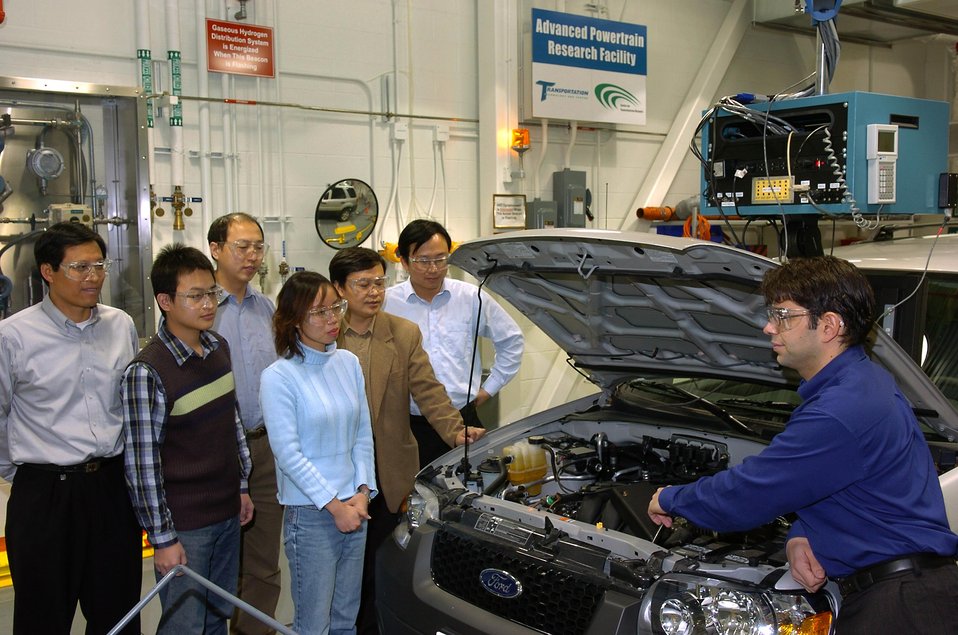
ARGONNE NATIONAL LABORATORY AND CHINESE RESEARCHERS DISCUSS FUEL ECONOMY AND PERFORMANCE ON A VEHICLE TO BE TESTED IN ARGONNE'S ADVANCED POWERTRAIN RESEARCH FACILITY.

DOE'S ARGONNE NATIONAL LABORATORY'S CENTER FOR TRANSPORTATION RESEARCH HAS DEVELOPED THE GREET (GREENHOUSES GASES, REGULATED EMISSIONS AND ENERGY USE IN TRANSPORTATION) SOFTWARE. GREET IS THE GOVERNMENT AND INDUSTRY STANDARD FOR ANALYZING VEHICLE AND FUEL COMBINATIONS. THE SOFTWARE CAN MEASURE THE USE OF TOTAL ENERGY IN BOTH RENEWABLE AND NON-RENEWABLE, THE EMISSIONS OF CARBON DIOXIDE AND OTHER POLLUTANTS. THE SOFTWARE HAS MORE THAN 2,000 REGISTERED USES IN NORTH AMERICA, EUROPE AND ASIA. ANL AND THE CHINA AUTOMOTIVE TECHNOLOGY RESEARCH CENTER ARE COLLABORATING TO DEVELOP ENERGY EFFICIENT VEHICLES AND CLEAN TRANSPORTATION FUELS IN CHINA.